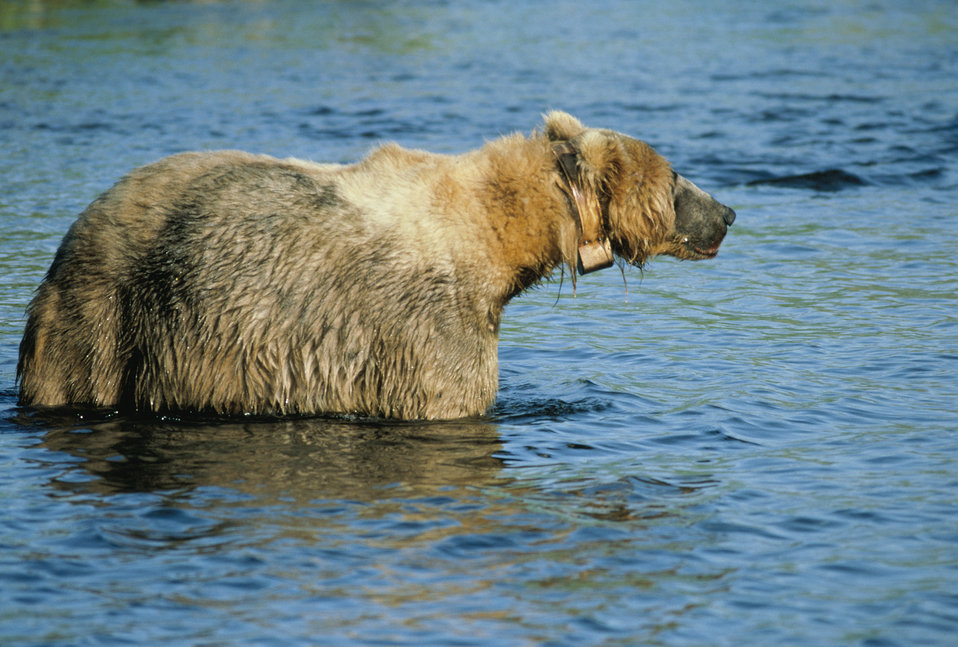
A kodiak brown bear

A radio-tagged kodiak brown bear standing in Dog Salmon Creek in water up to its belly.